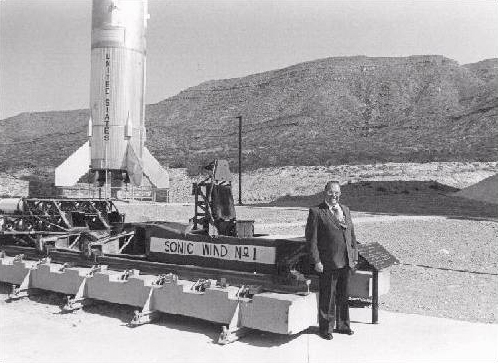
Colonel (Dr.) John Paul Stapp

1950's -- Colonel John Paul Stapp at The New Mexico Museum of Space History. He was a frequent and most welcomed visitor to the Center. Stapp was not only the